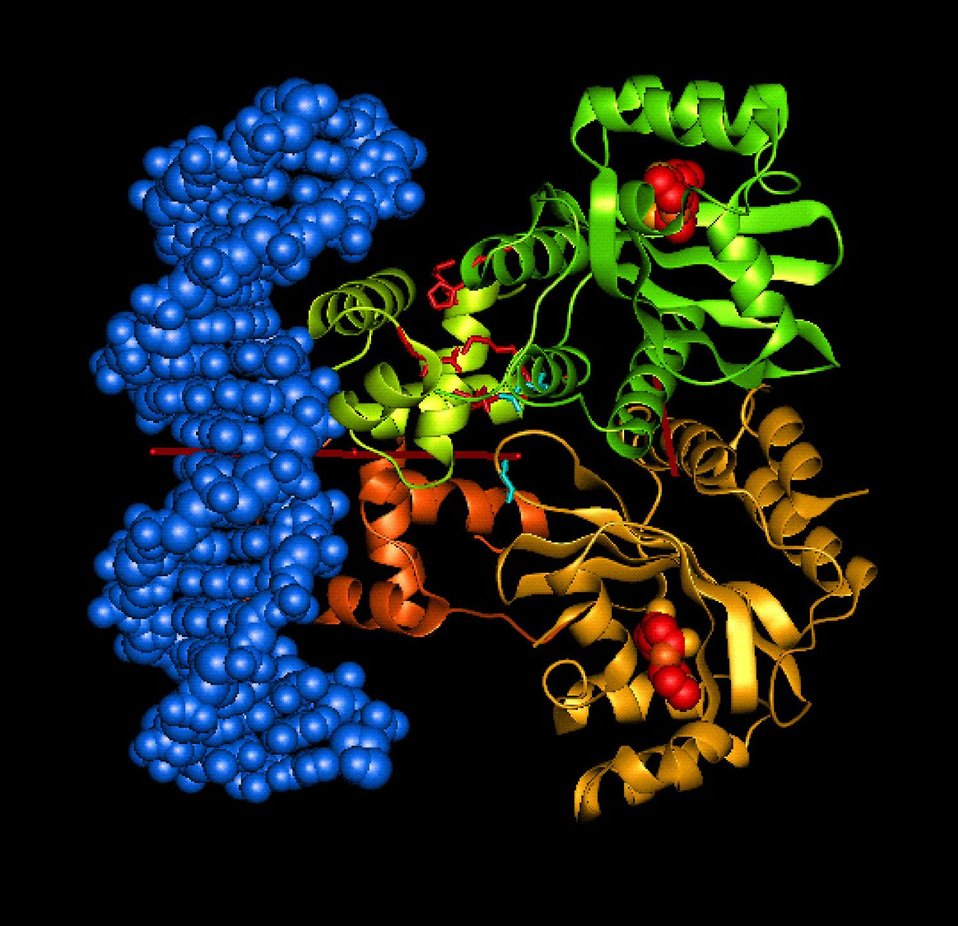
THE TRAR PROTEIN STRUCTURE WAS DETERMINED AT ANL'S STRUCTURAL BIOLOGY CENTER.

BIOLOGISTS ARE USING THE NEWEST BIOLOGICAL DETECTIVE DEVICES TO DETERMINE THE STRUCTURES OF PROTEINS AND PROVIDE INSIGHT INTO THE DETAILS OF LIFE FROM CELL COMMUNICATION TO GENE ACTIVATION. ARGONNE SCIENTISTS ARE PIECING TOGETHER THE PUZZLE OF LIFE FROM ALL ANGLES BY OPERATING THE WORLD'S FASTEST FACILITY FOR DETERMINING 3-D STRUCTURES OF PROTEINS AND THEIR FUNCTIONS, DEVELOPING AN ASSEMBLY LINE TO SPEED THE DELICATE LAB WORK AND USING COMPUTERS TO FOCUS FUTURE RESEARCH.